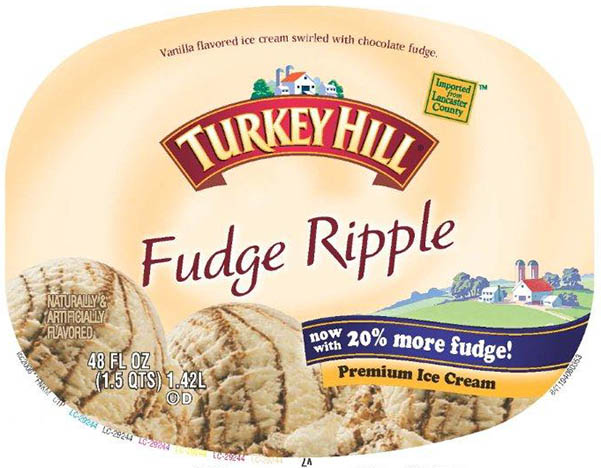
RECALLED – Ice Cream

October 4, 2013 – Product Recall – Turkey Hill Dairy Issues Voluntary Recall of Chocolate Peanut Butter Cup Premium Ice Cream,Fudge Ripple Premium Ice Cream, and Moose Tracks Stuff’d Frozen Dairy Dessert.